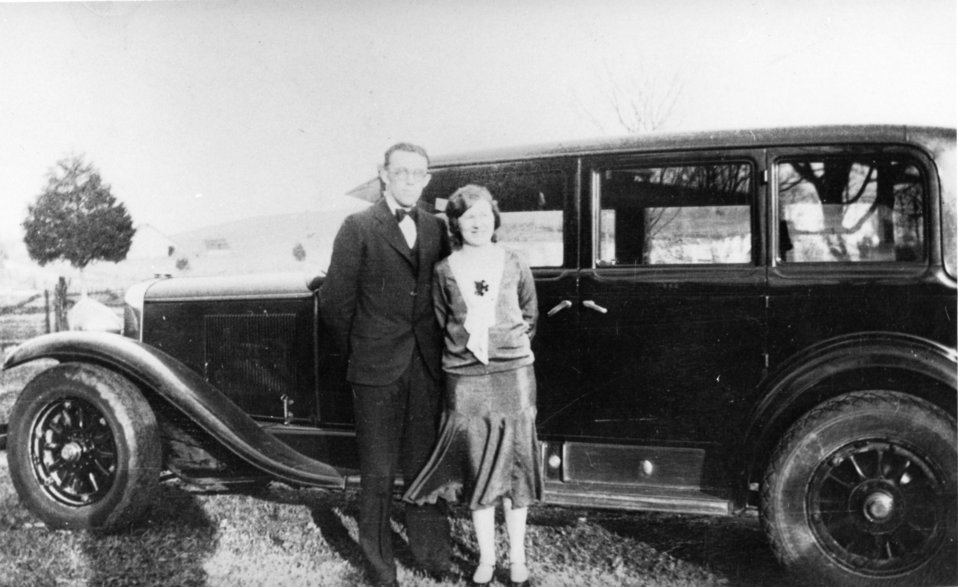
Early settlers at Oak Ridge